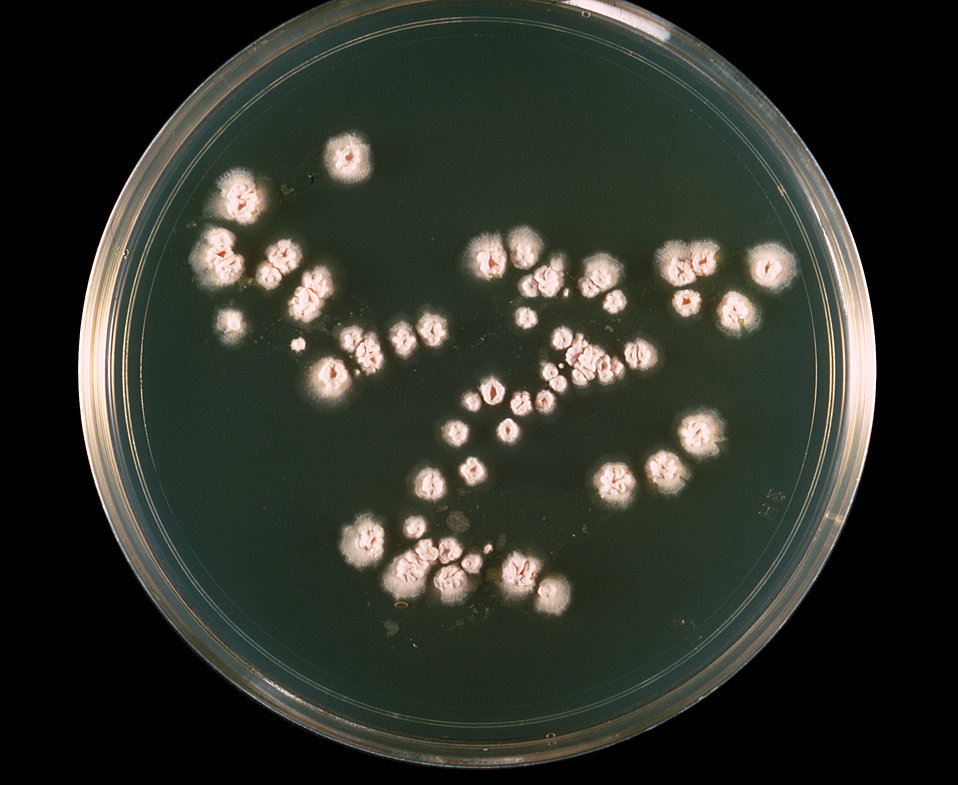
This is a plate culture of the bacteria Nocardia asteroides grown on 7H10 agar medium at 37� C.